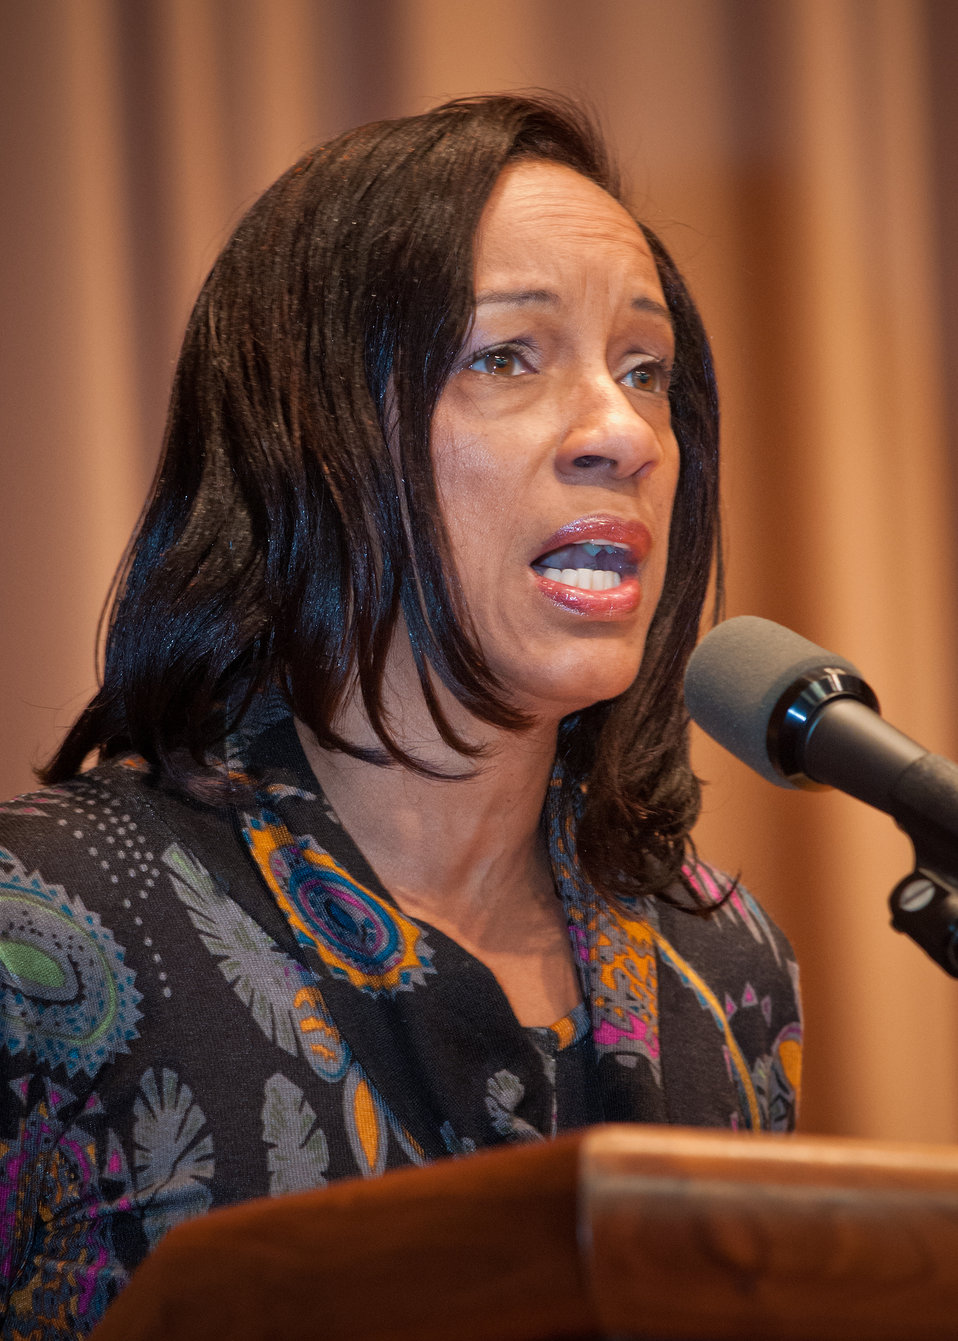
Agriculture Risk Management Agency Hispanic Employment Program manager Barbara Smith sings the National Anthem at the U.S. Department of Agriculture (USDA) 2012 Hispanic Heritage Month in Washington, D.C. on Thursday Sept. 20, 2012.